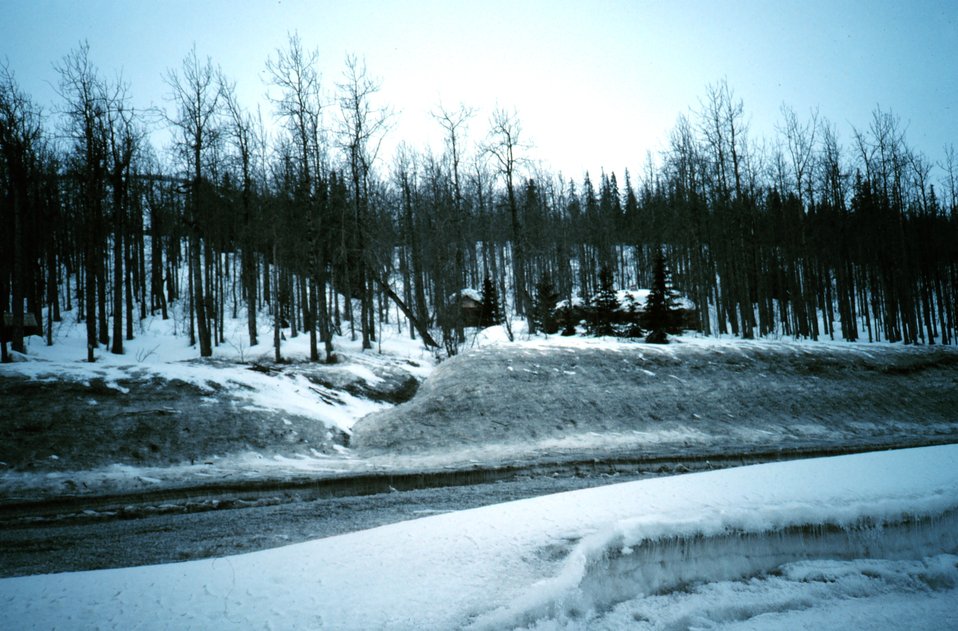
A scene along the Seward Highway